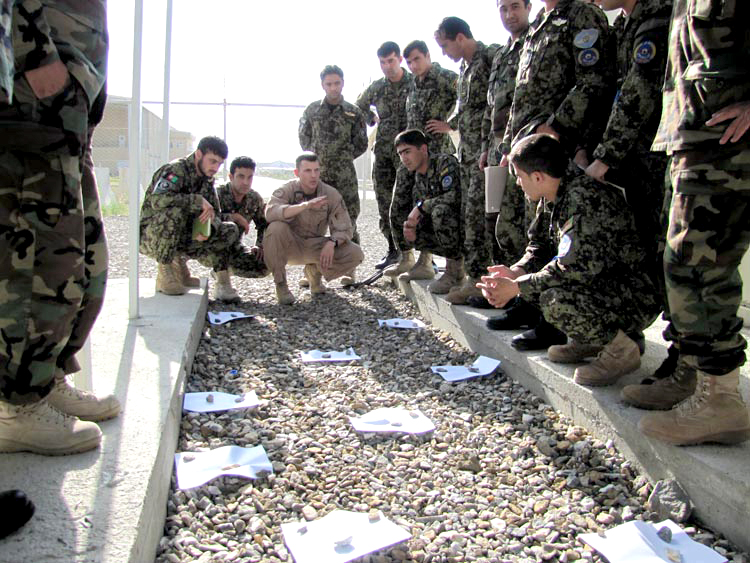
Thunder Lab teaches future Afghan pilots vital skills

Afghan air force Thunder Lab officers practice communication exercises June 19, 2010 at the Afghan National Army Air Force base in Kabul, Afghanistan.